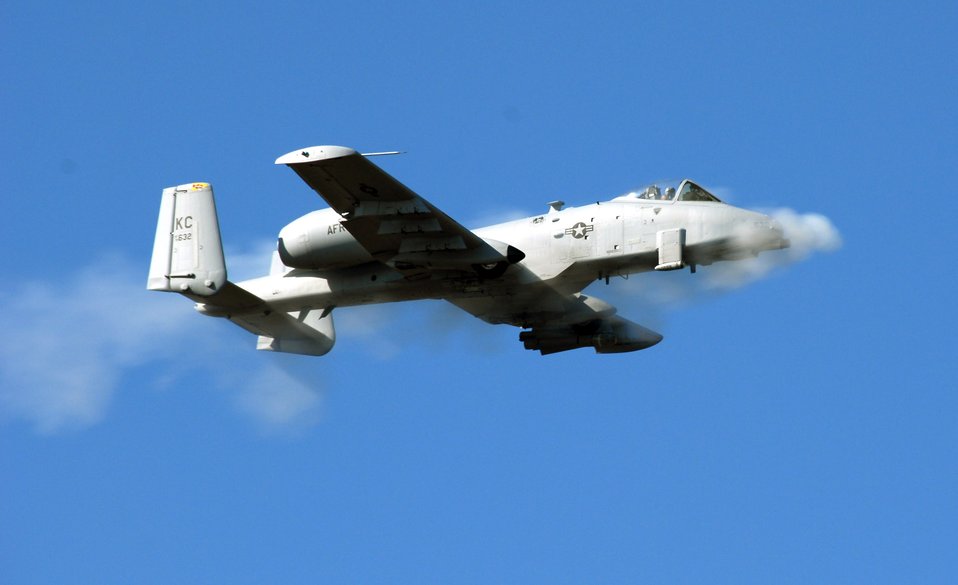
Hawgsmoke 2008

An A-10 Thunderbolt II pilot from the Air Force Reserve Command's 442nd Fighter Wing based at Whiteman Air Force Base, Mo., fires the plane's 30-mm cannon toward a target at the Smoky Hill Range near Salina, Kan., Oct. 16. Fourteen A-10 units from across the Air Force are competing in Hawgsmoke 2008, a biennial A-10 bombing and aerial gunnery competition, this year hosted by the 442nd FW.